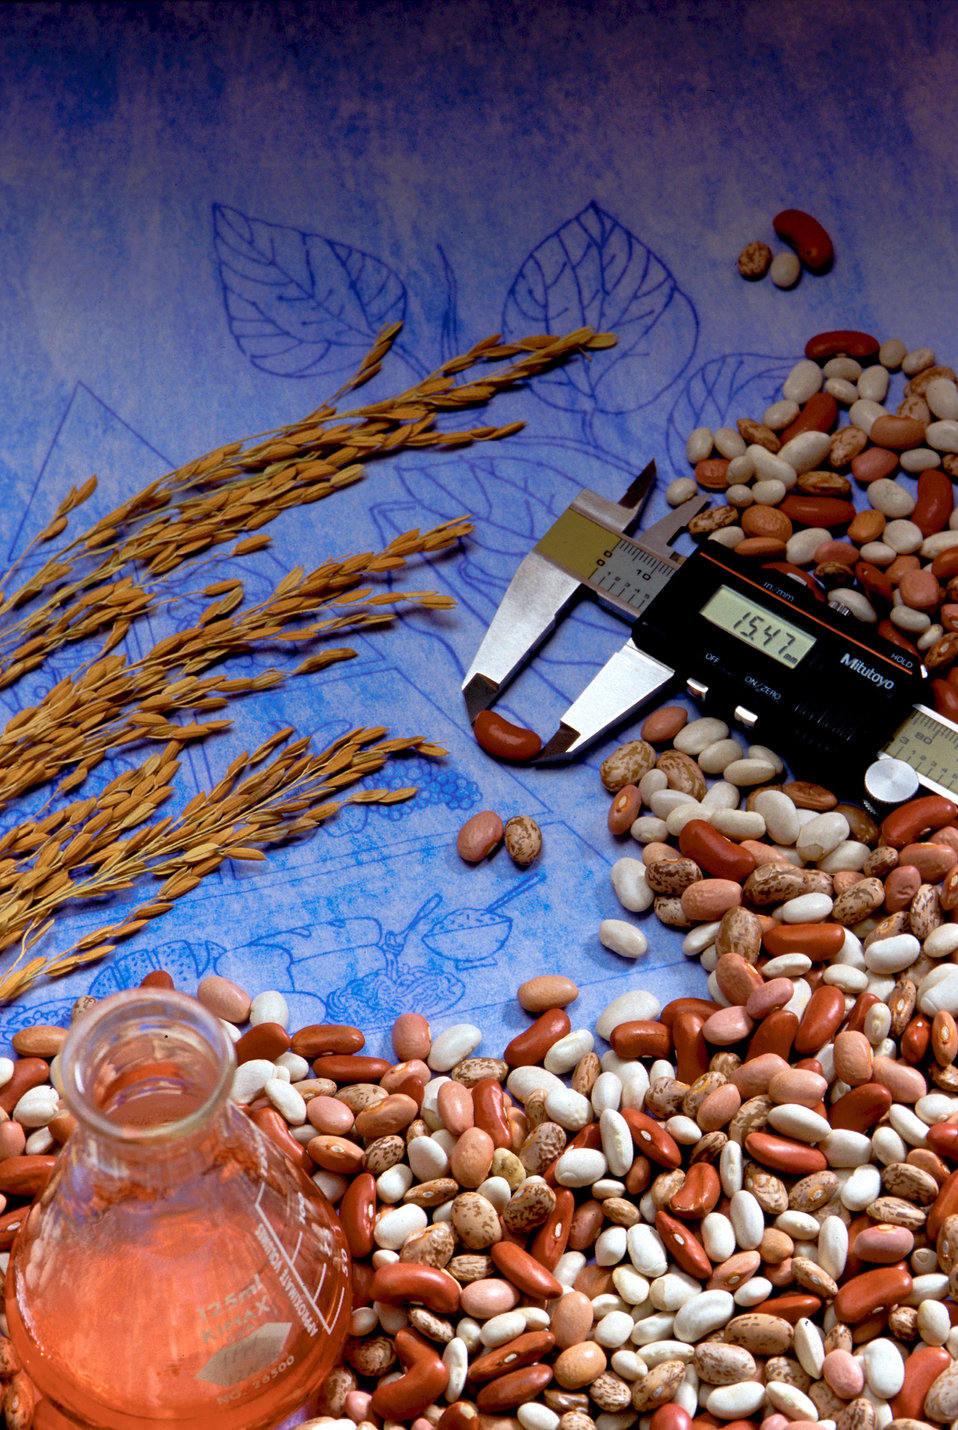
A significant source of quality nutrition, beans and other staples, like wheat, corn, and rice are being improved by U.S. Department of Agriculture (USDA) Agricultural Research Service (ARS) plant breeder’s intent on increasing the vitamins and trace elements they contain.